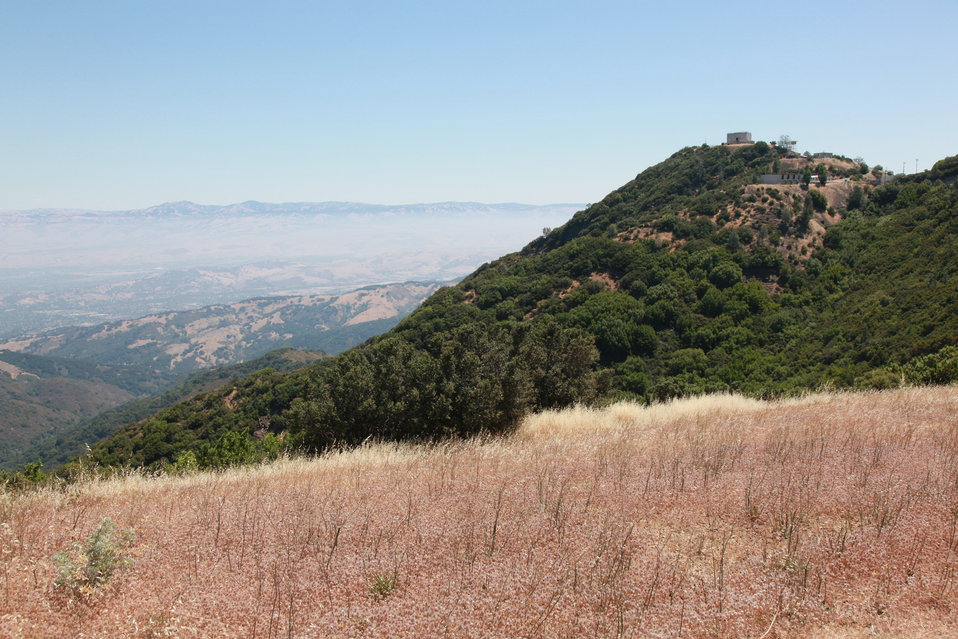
SACRAMENTO,Calif. (July 9,2010)-- With fog off in the distance the sun shines on an early afternoon atop of Mount Umunhum.